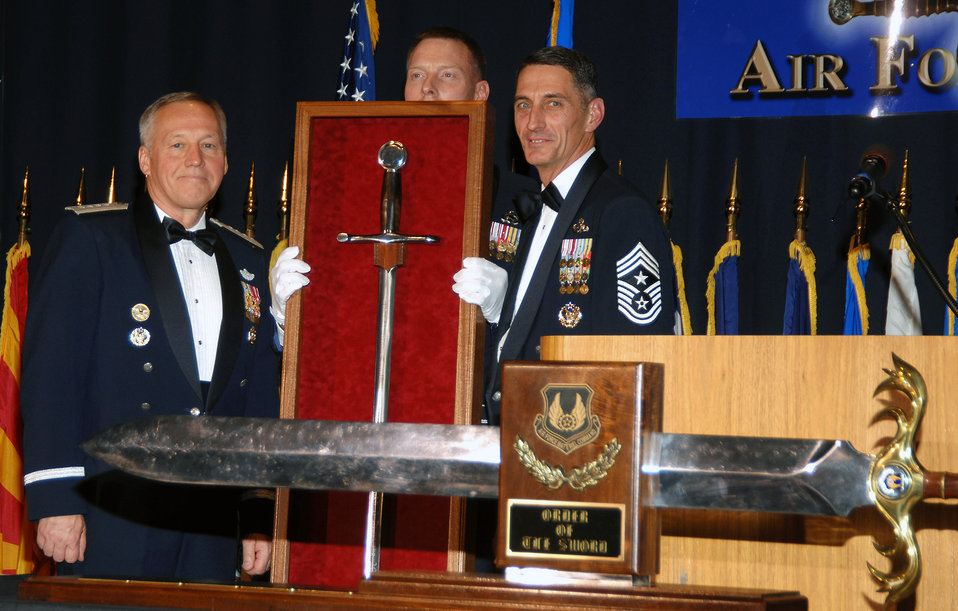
AFMC Airmen honor commander with Order of the Sword

Gen. Bruce Carlson (left) is joined by the Chief Master Sgt. William Gurney, who holds General Carlson's personal sword, and Chief Master Sgt. Jonathan Hake during the Order of the Sword Ceremony Dec. 6 at the National Museum of the U.S. Air Force at Wright-Patterson Air Force Base, Ohio. General Carlson is the commander of Air Force Materiel Command, Chief Gurney was the Order of the Sword sergeant at arms for the ceremony, and Chief Hake is the AFMC command chief master sergeant.